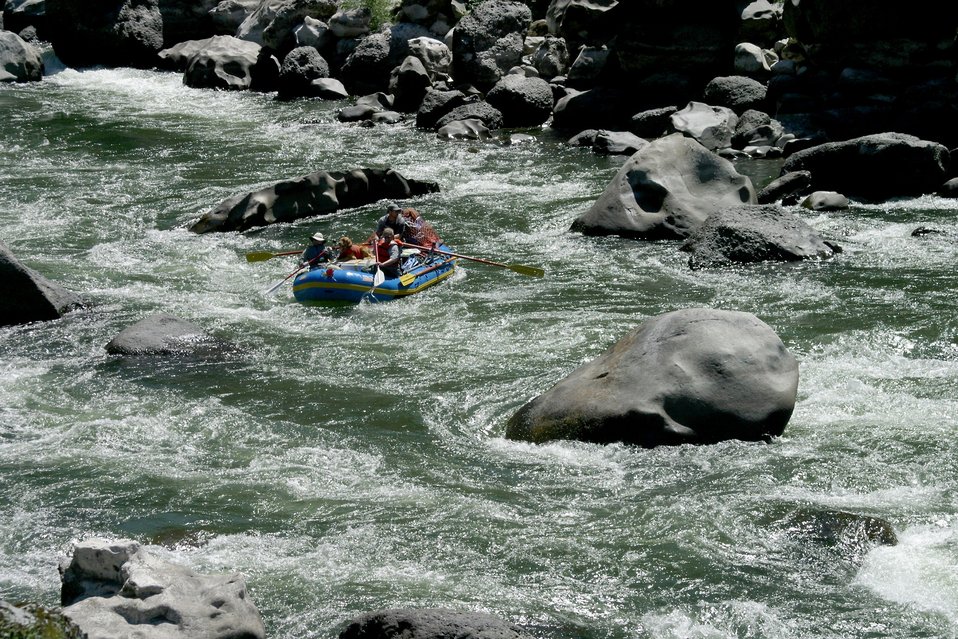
Blossom Rapids.